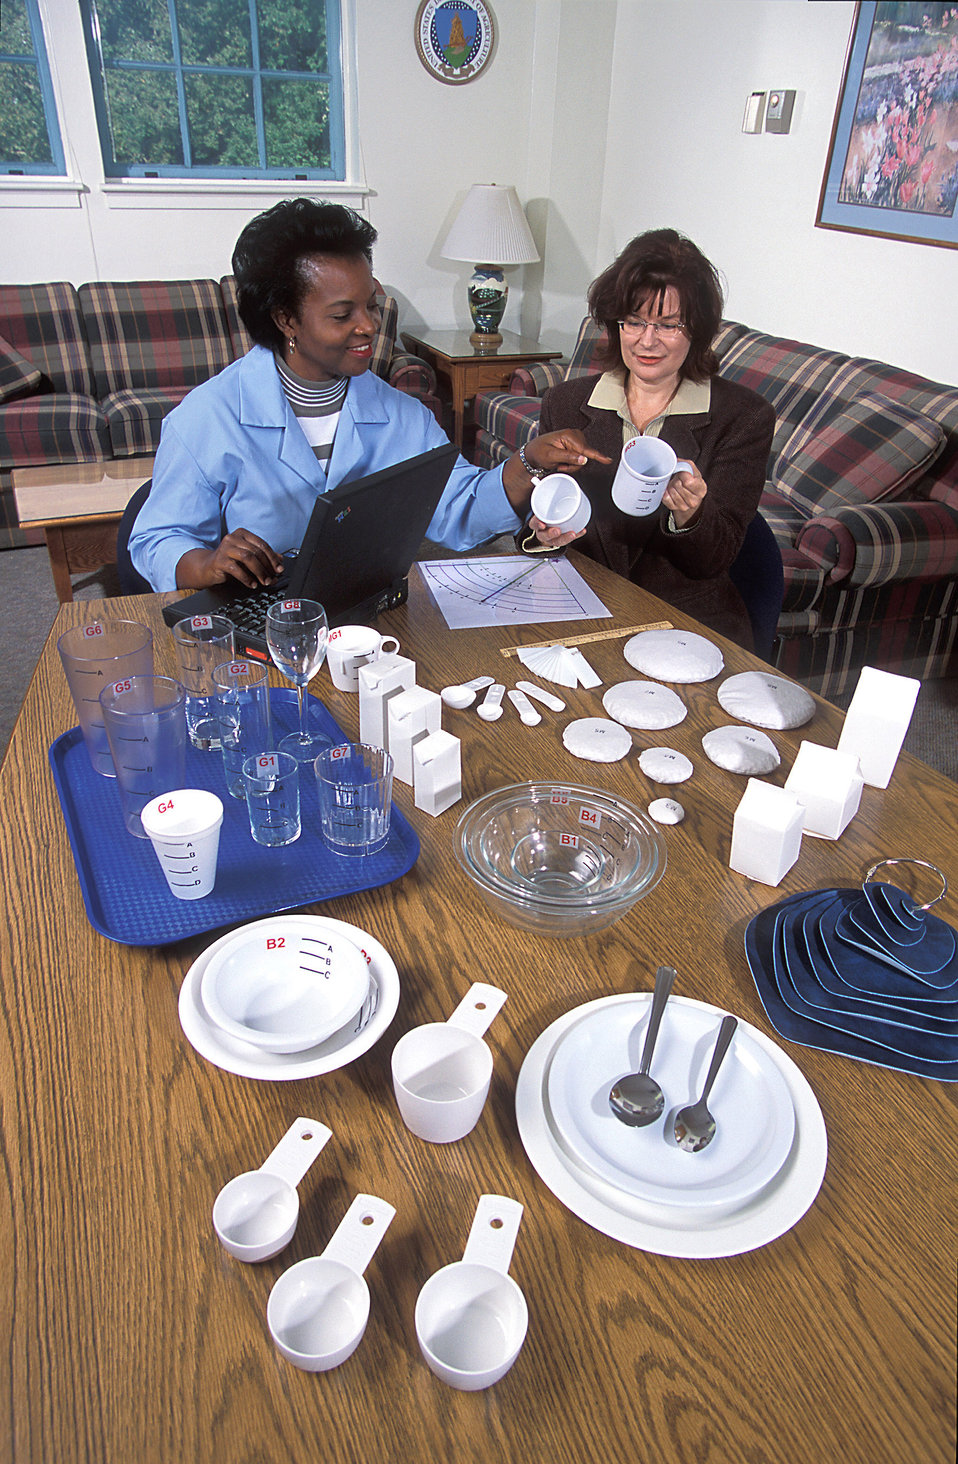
Using the computerized dietary-intake survey program that was developed and validated by U.S. Department of Agriculture (USDA) Agricultural Research Service (ARS) Beltsville Human Nutrition Research Center (BHNRC) scientists’ nutritionist Grace Omolewa-Tomobi uses serving-size aides to help a study participant to recall food portions and beverages she consumed while in the study on Feb. 29, 2012.